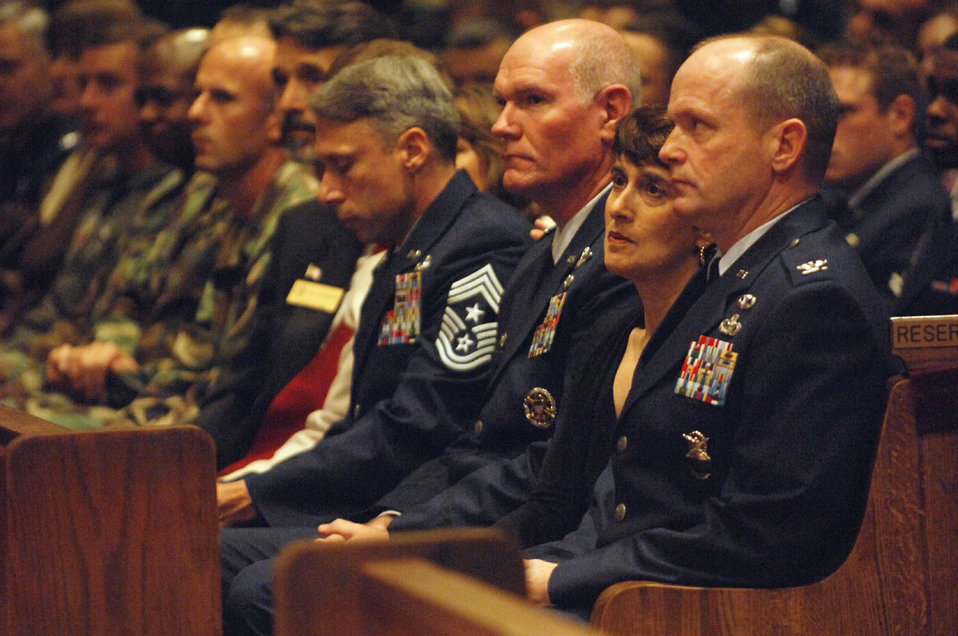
Fallen Airman honored during memorial service

The commander of the 820th Security Forces Group, Col. John Decknick (right) and wife Sammie with Col. Joe Callahan, 23rd Wing commander and Chief Master Sgt. Michael Mazzi, 23rd Wing command chief, reflect during the memorial service for Airman 1st Class LeeBernard Chavis Oct. 19. Security force member Airman Chavis was killed Oct. 14 in the line of duty while on joint patrol with the Iraqi police in the vicinity of Baghdad, Iraq.